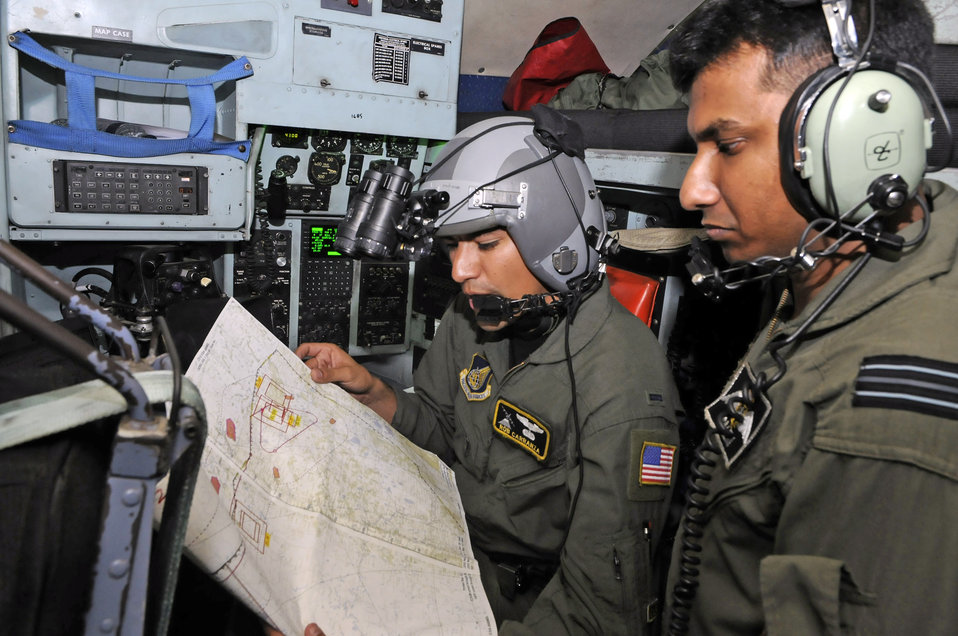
Airmen wrap up bilateral training exercise in Bangladesh

First Lt. Robert Carranza goes over route points with Bangladesh Flt. Lt. Salem, a co-pilot, during a flight to Sylhet, Bangladesh, during exercise Cope South 10, Sept. 22, 2010 in Bangladesh. The bilateral exercise's subject-matter expert exchanges in maintenance, operations and rigging disciplines strengthen the strong and growing partnership between the United States and Bangladesh. Two C-130s from Yokota Air Base, Japan, and an AN-32 from Kurmitola Air Base participated in Cope South 10. Lieutenant Carranza is a navigator from the 36th Airlift Squadron at Yokota Air Base, Japan.